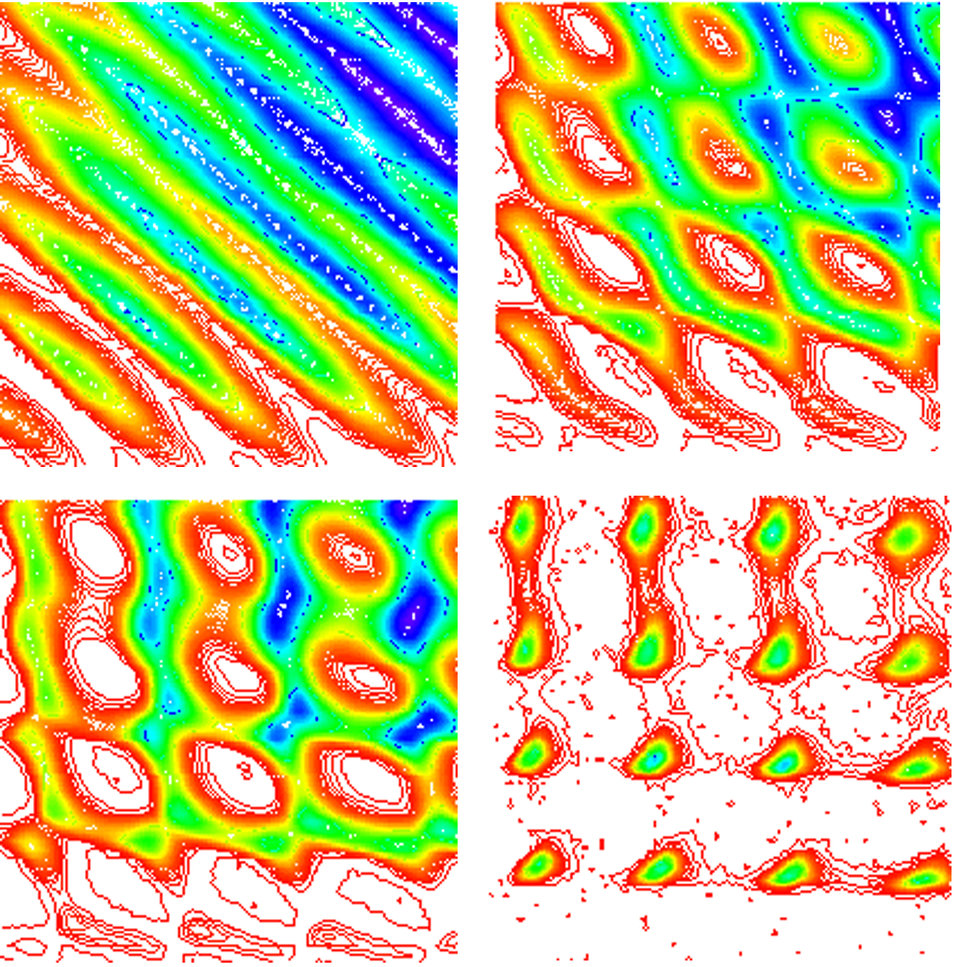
Silicon Transistor

The colorized images show how tuning the voltage of the three gates controls very small amounts of electrical charge and regulates current flow in the new silicon transistor. In the first figure, the pattern of diagonal lines indicates the charge is correlated throughout the device, and current is flowing (at levels ranging from 0 Amps shown in red, to 1.4 nanoAmps shown in violet). The next three figures show what happens as the voltage applied to the center gate is reduced. In the last figure, the square pattern indicates the charge has separated in the device, and the large amount of white space indicates a related drop off in the current.